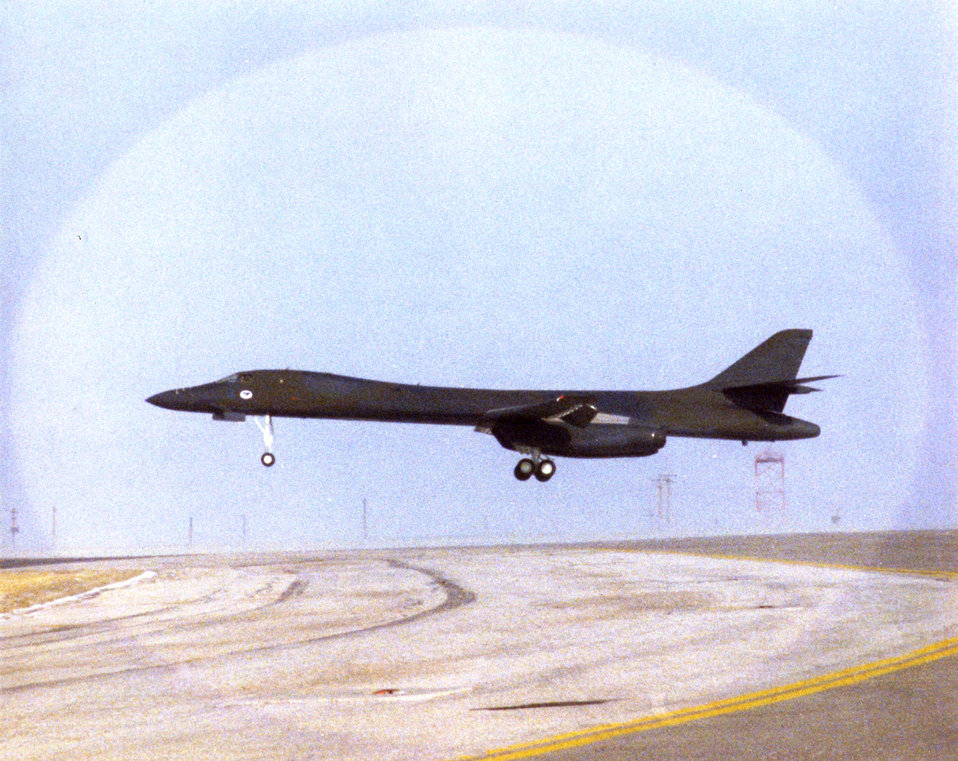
20 years of lethality: Ellsworth celebrates B-1's history

The first B-1B Lancer arrived at Ellsworth Air Force Base, S.D., on Jan. 21, 1987. The bomber continues to take off from Ellsworth's runway 20 years later.